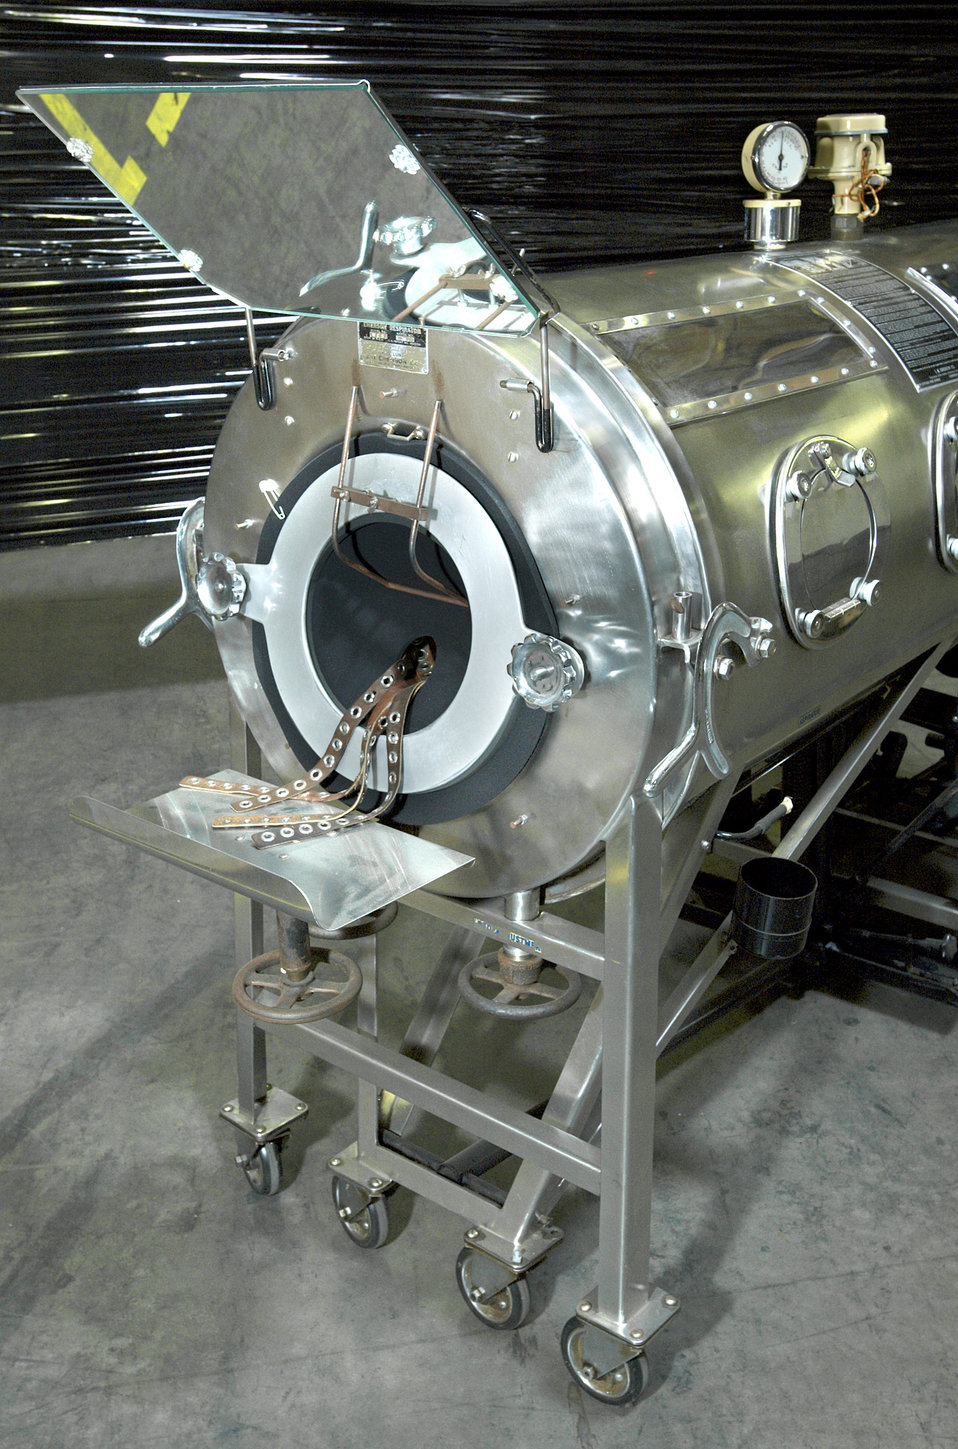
This photograph shows the front oblique view of an Emerson Respirator, known as an 'iron lung.' Devices such as these were used by polio patients whose ability to breath was paralyzed due to this crippling viral disease.